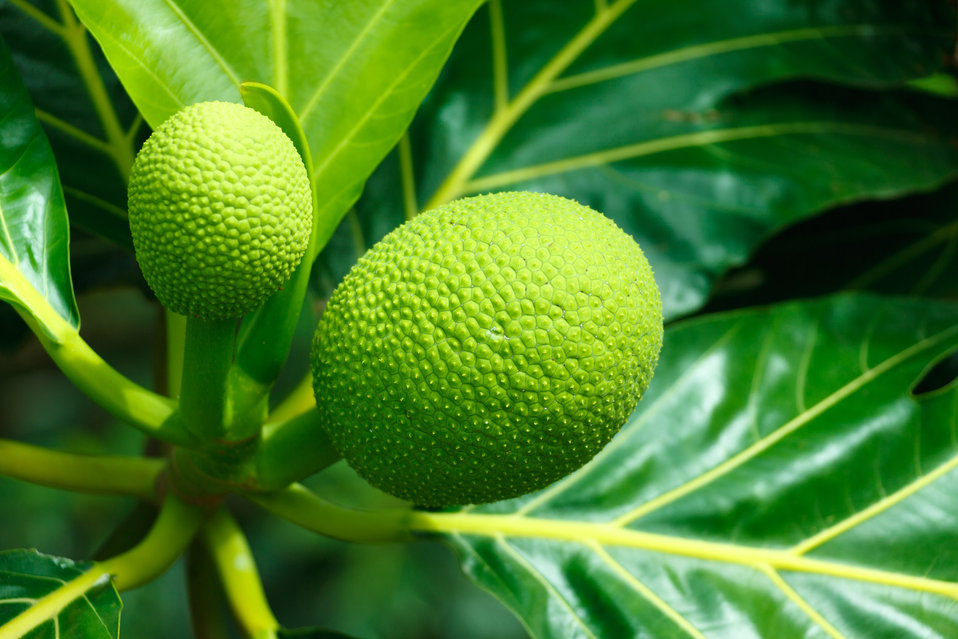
Breadfruit

Green breadfruit.